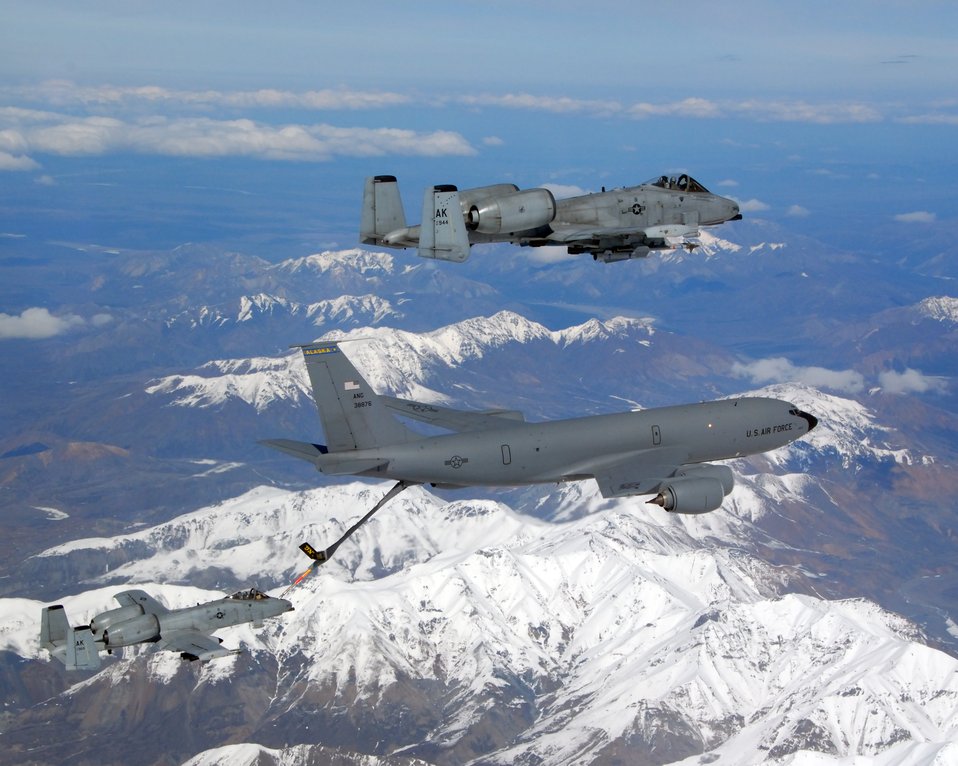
Tanker task force keeps Red Flag flying

A KC-135R Stratotanker flies in formation with two A-10 Warthog IIs from the 355th Fighter Squadron May 29 near Eielson Air Force Base, Alaska. The three aircraft assigned to Eielson AFB flew in formation for the last time due to the deactivation of the 355th FS and 18th FS. The tanker is assigned to the Alaska Air National Guard's 168th Air Refueling Wing. The KC-135R along with tankers from Grand Forks AFB, N.D., and MacDill AFB, Fla., are providing air refueling support to aircraft for the joint exercise Red Flag-Alaska, lasting through June 8.